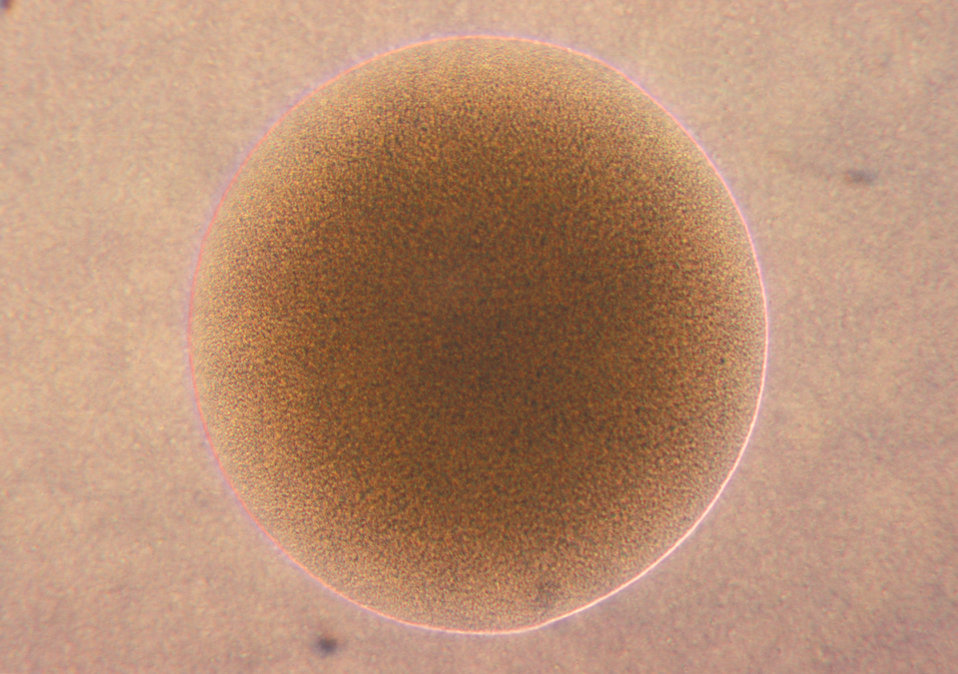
This is a photomicrograph of a T3 colony of Neisseria gonorrhoeae bacteria; Magnified 100X.